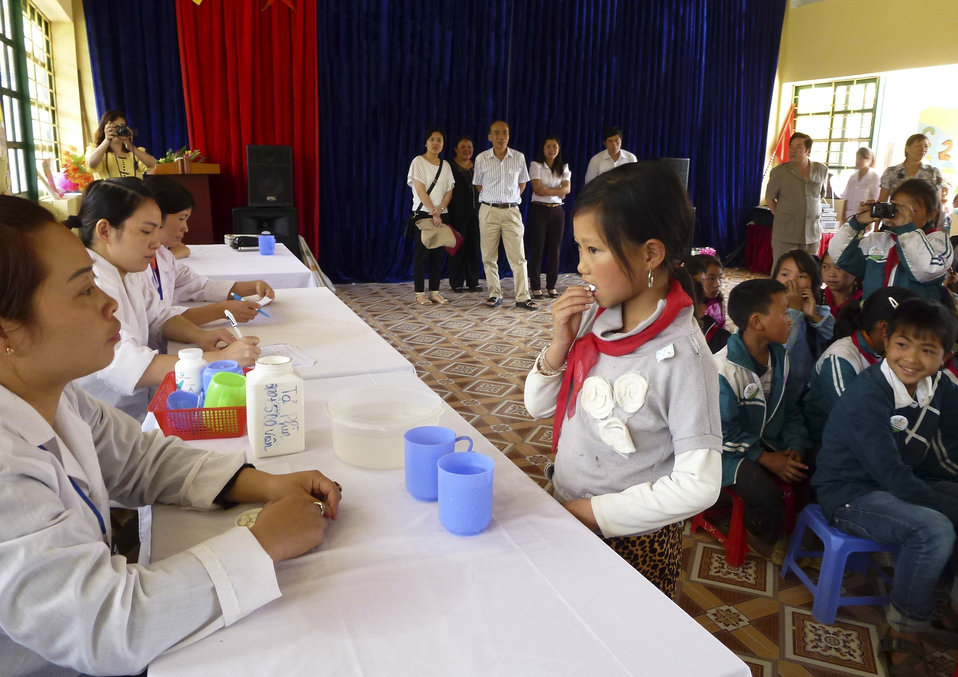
USAID supports deworming medication for school children in Sa Pa district of Lao Cai province

May 13, 2014.